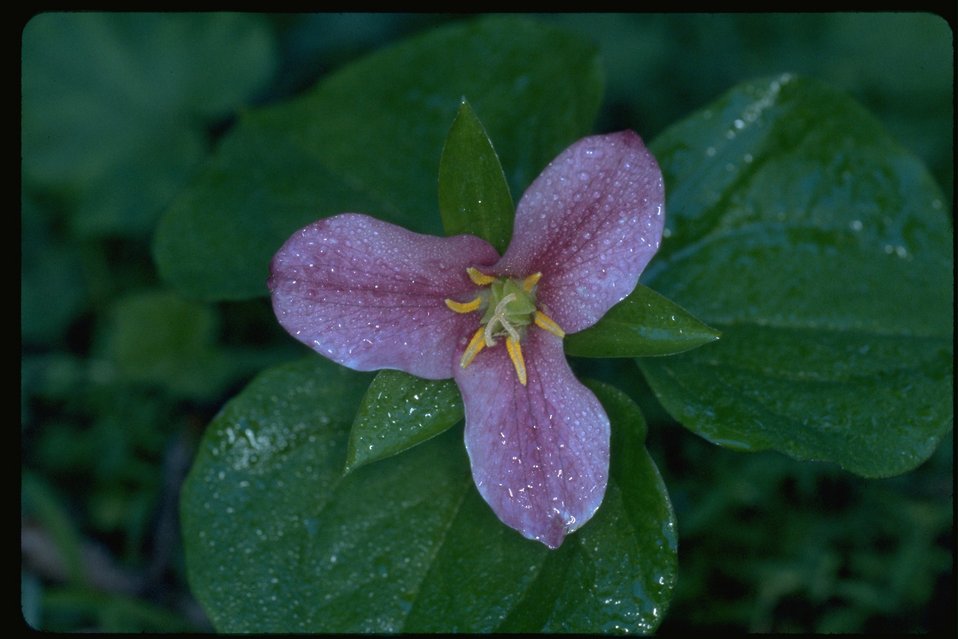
Close up shot of purple Trillium.